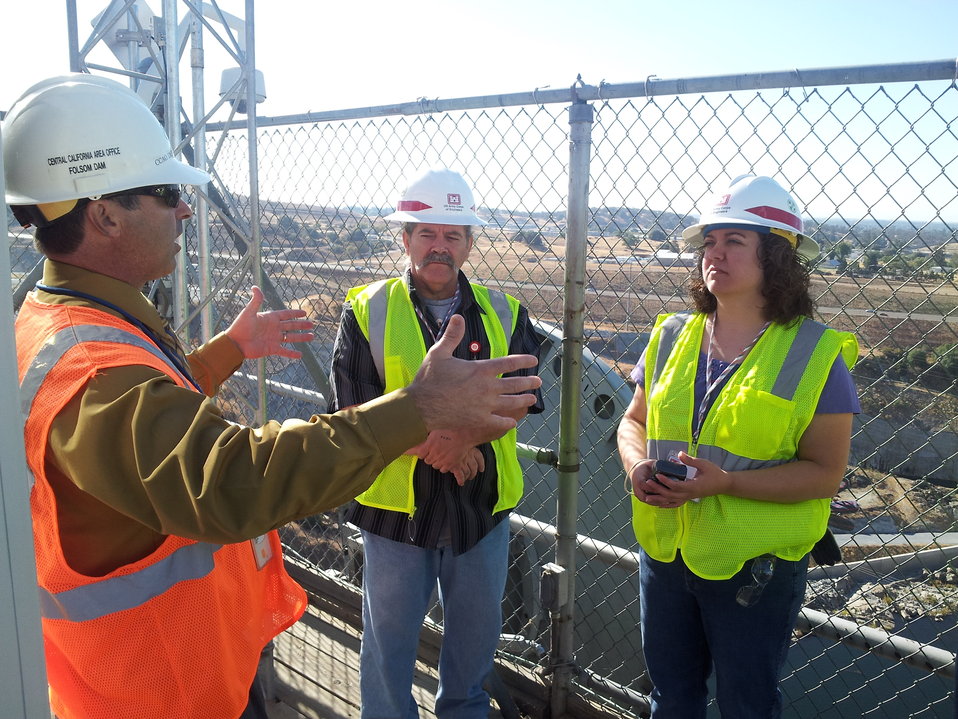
House of Rep. staff member visits Folsom Dam Project

Drew Lessard (left), a deputy manager from the Central California Office of the Bureau of Reclamation, describes the Folsom Dam water control system to Angie Giancarlo, House Appropriations Committee staff member, during a visit to the Folsom Dam auxiliary spillway construction site in Folsom, Calif., Oct. 19, 2012. The U.S. Army Corps of Engineers in cooperation with the U.S. Bureau of Reclamation, the Central Valley Flood Protection Board, and the Sacramento Area Flood Control Agency, are building the spillway to improve the safety of the existing dam and reduce flood risk for the greater Sacramento area.